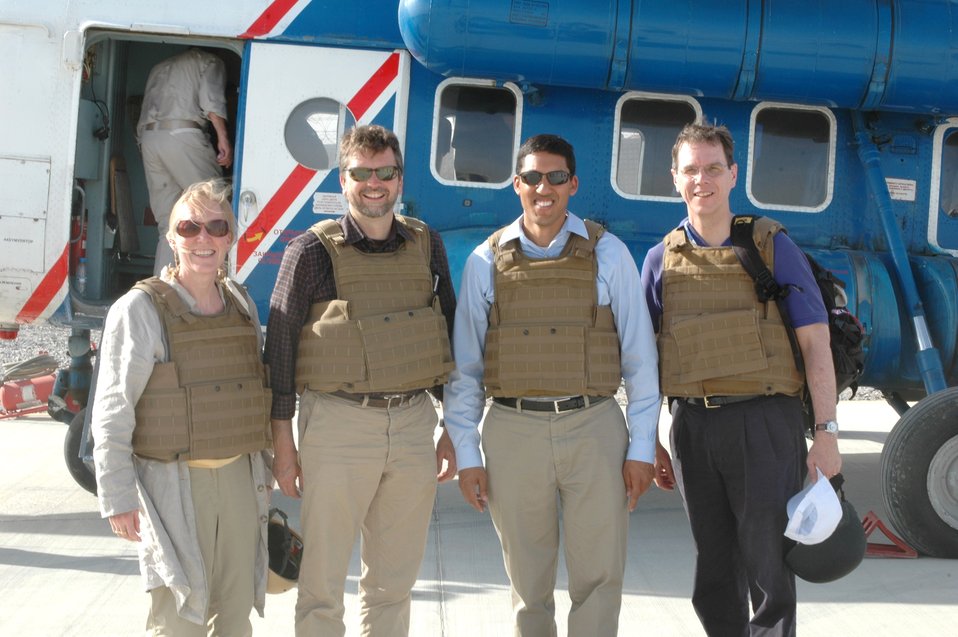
Dr Shah Visits Argandab April 10, 2010